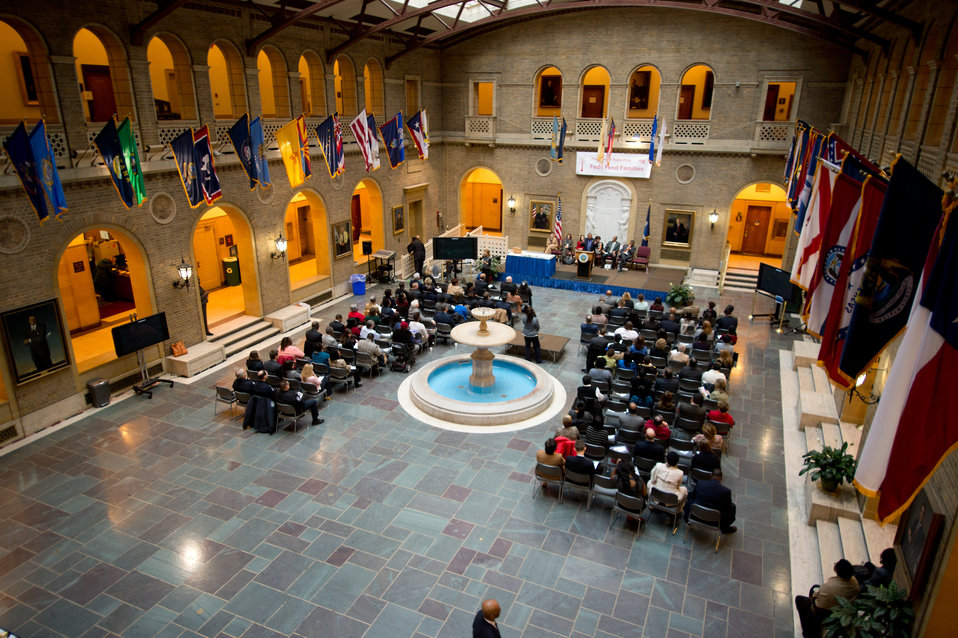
The United States Department of Agriculture (USDA), held the Feds Feed Families closing ceremony, on Wed., Nov. 13, 2013 in Washington, D.C. USDA led the government-wide effort in partnership with the Chief Human Capital Officers Council (CHCO) the Department of Defense and other Federal government Departments. Federal employees nationwide stepped up the challenge of Feds Feed Families and gathered 9 million pounds of food for food banks across the nation and the National Capital Region for families in need setting an all time record high.